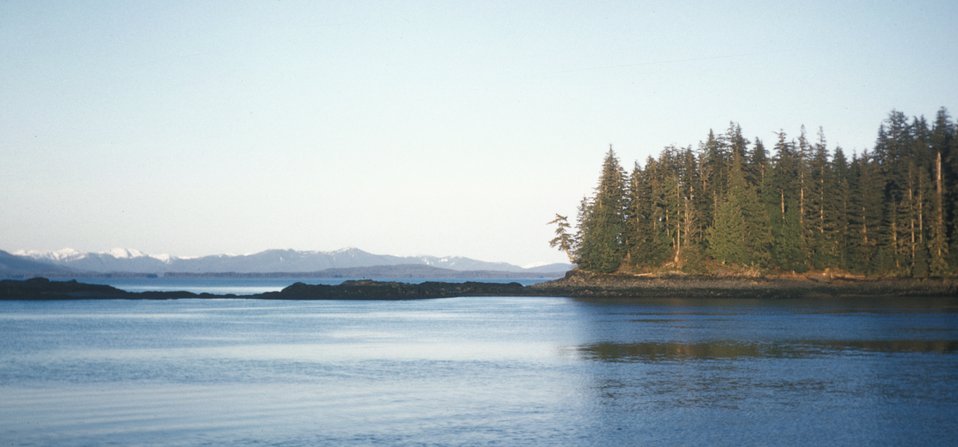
Alaska maritime scene. Note highwater line on island.